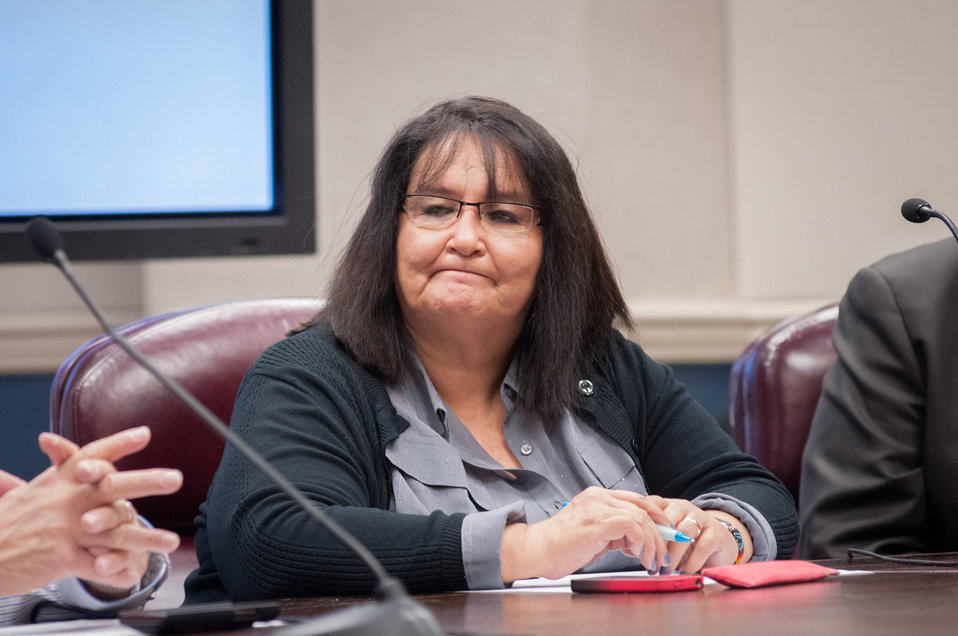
Blackfeet Community College President Billie Jo Kipp, Browning Montana, during the U.S. Department of Agriculture (USDA) and American Indian Higher Education Consortium Leadership Group (AIHEC) Winter Meeting, at the USDA Whitten Building, Williamsburg Room, in Washington D.C., on Friday, Feb. 8, 2013.